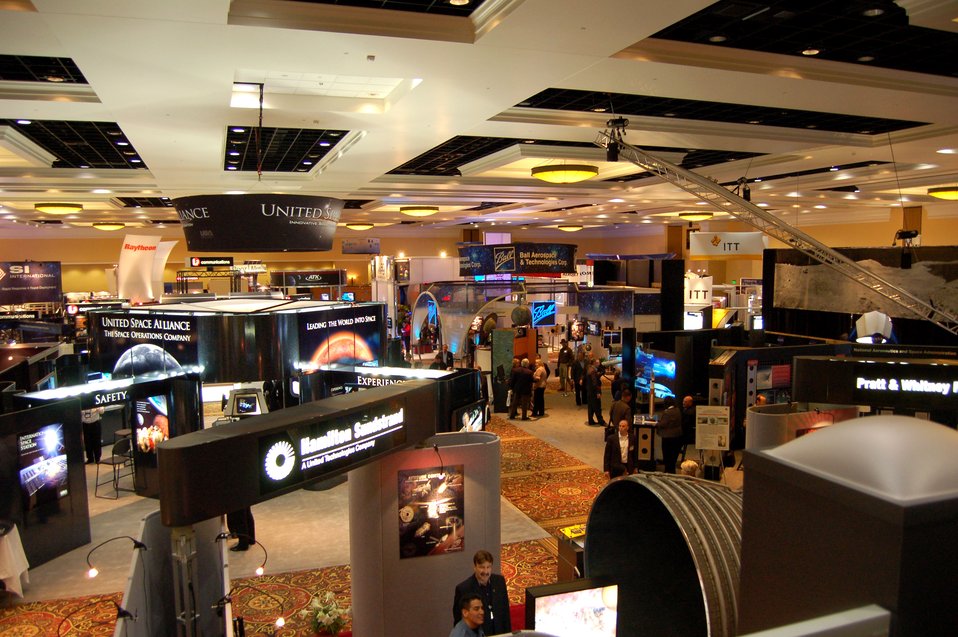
PACAF commander stresses importance of space

Displays crowd the exhibit hall during the 23rd National Space Symposium April 12 at the Broadmoor in Colorado Springs, Colo. In addition to the exhibits, there were numerous guest speakers at the event.